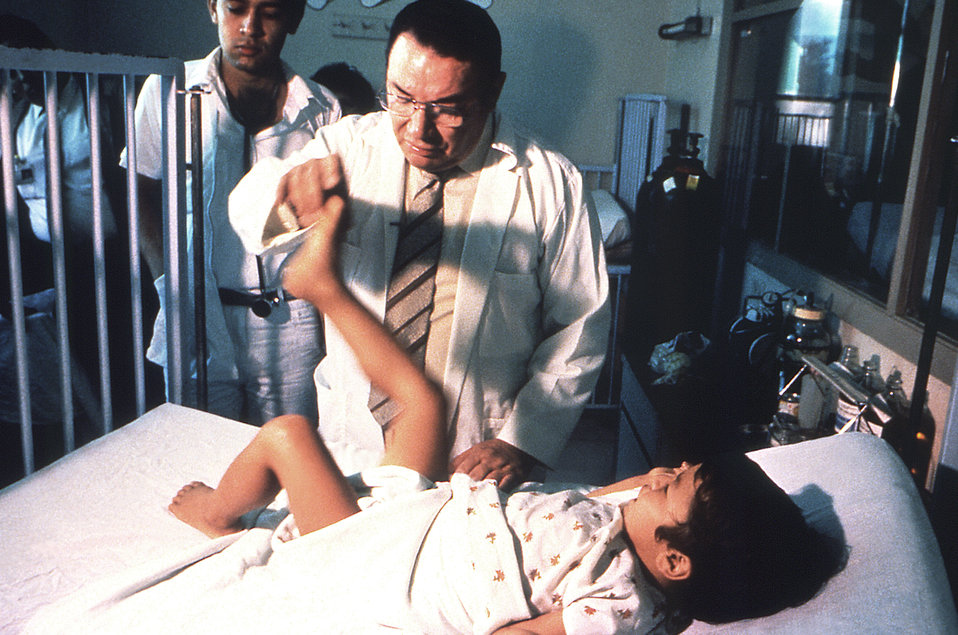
Here, in a clinical setting, a physician was examining the neurologic status of a young boy's lower limbs, after the child had acquired the paralytic poliovirus.